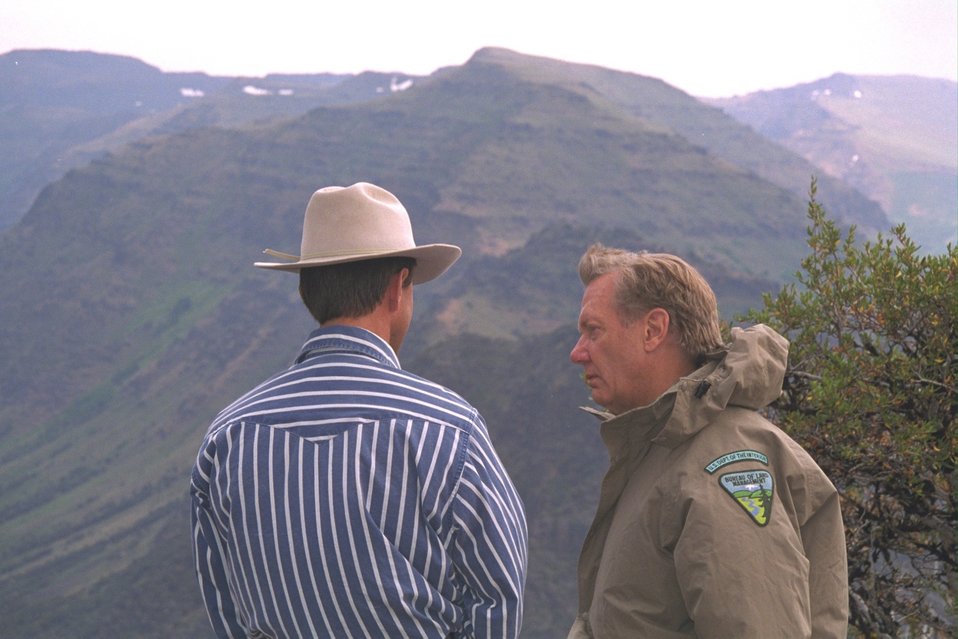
Rancher, Stacie Davies, talks with Secretary Babbitt about Steens Designation issues at Big Indian Gorge.